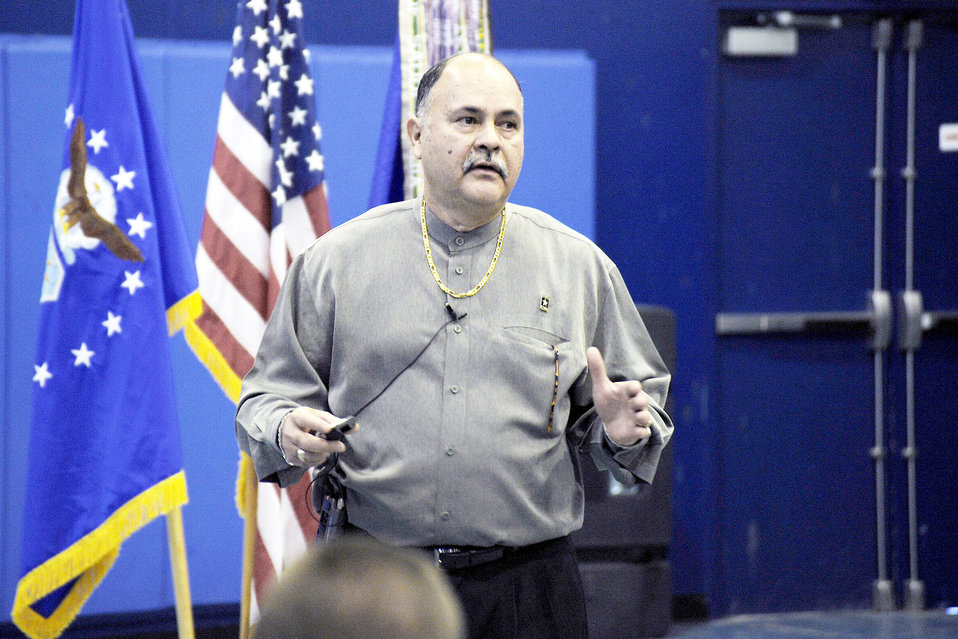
Schriever Wingman Day

Eddie Roski, wing drug demand reduction program manager talks about the hazards of drinking and driving during Wingman Day for the 50th Space Wing Dec. 9, 2009, at Schriever Air Force Base, Colo. Wingman Day is an Air Force-wide program established to strengthen the morale and welfare of Air Force units.